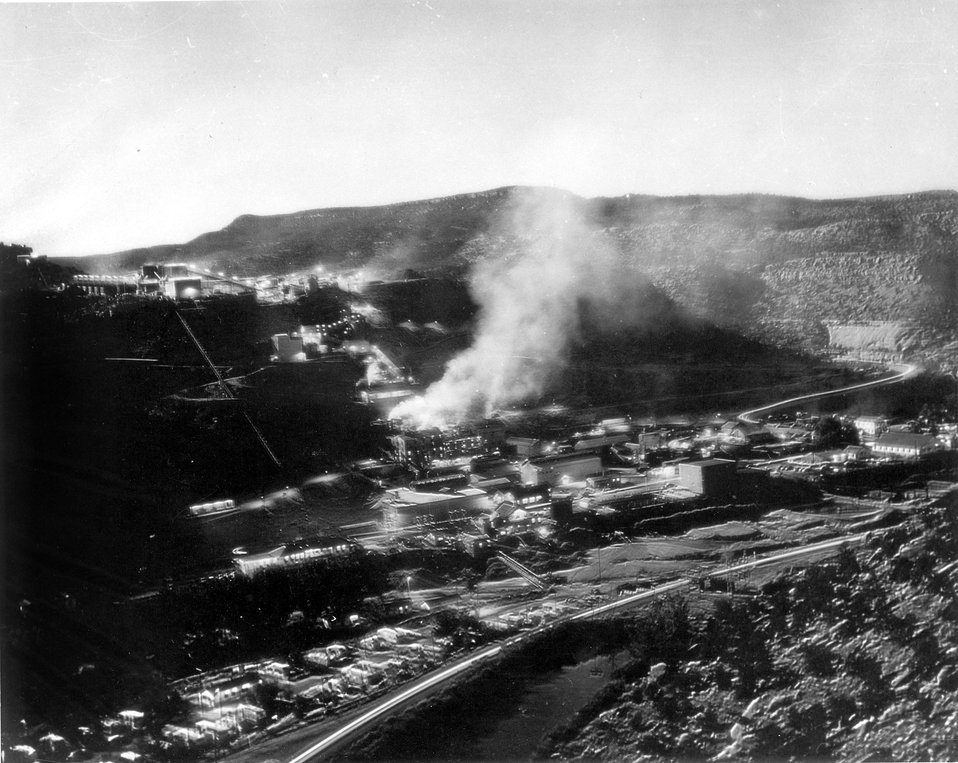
Union Carbide's uranium mill at Uravan, Colorado, is one of the largest on the Colorado Plateau. c. 1976